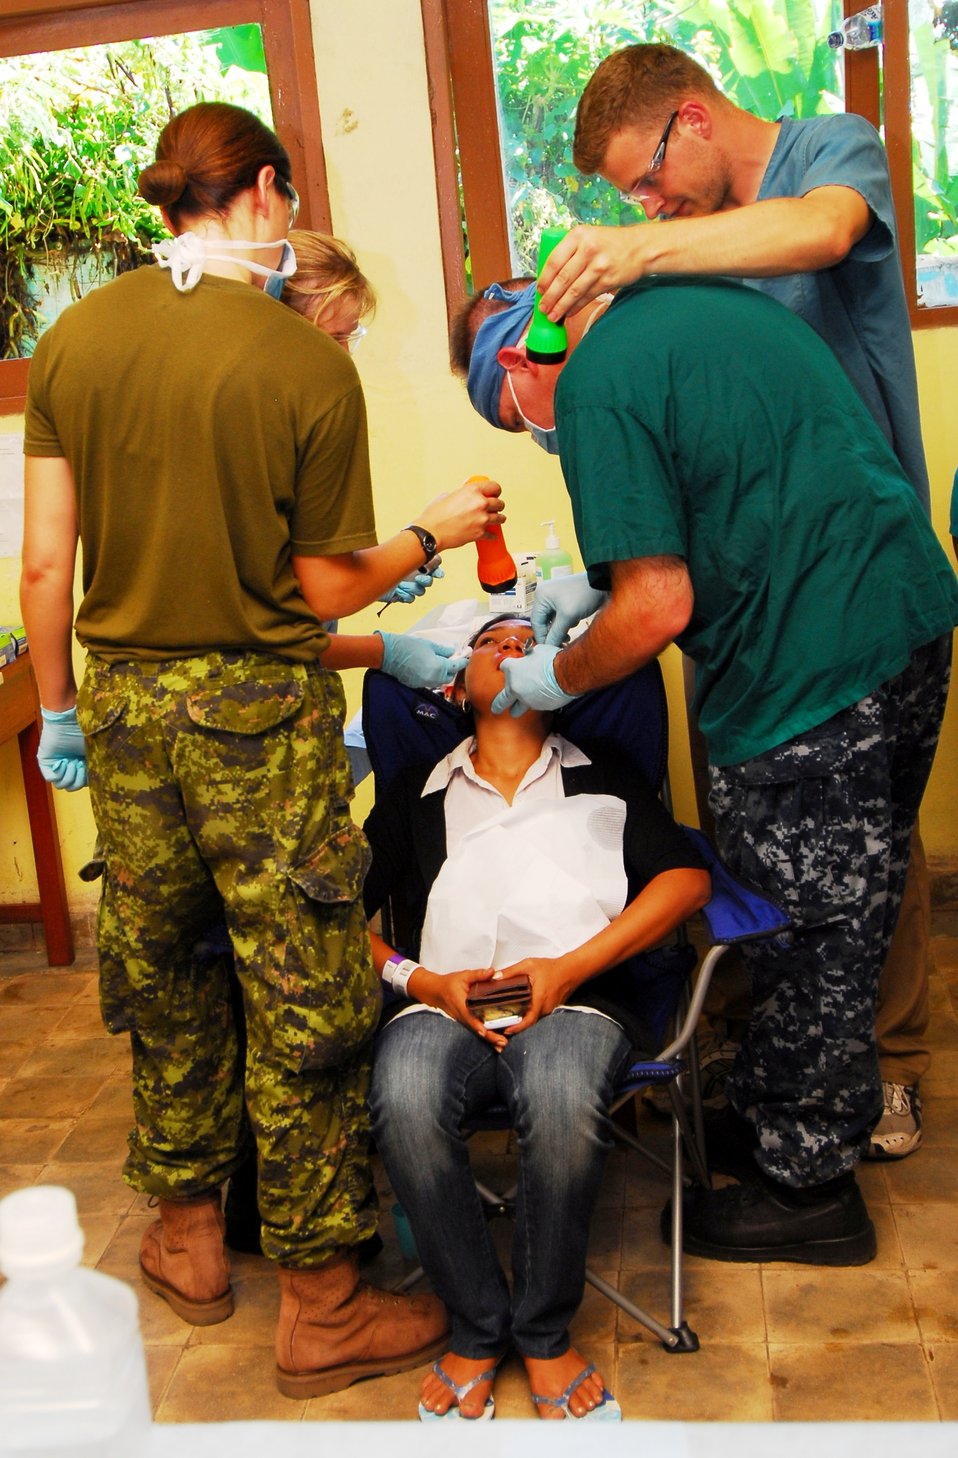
Lt. (Dr.) Scott Pasieta Performs a Tooth Extraction

Lt. (Dr.) Scott Pasieta, currently embarked aboard the Military Sealift Command hospital ship USNS Mercy (T-AH 19), performs a tooth extraction during a dental civic action program in Tobelo, Indonesia, on July 14, 2010. USNS Mercy (T-AH 19) is in the North Maluku Islands conducting Pacific Partnership 2010, the fifth in a series of annual U.S. Pacific Fleet endeavors conducted in Indonesia as a disaster relief exercise to strengthen regional partnerships.